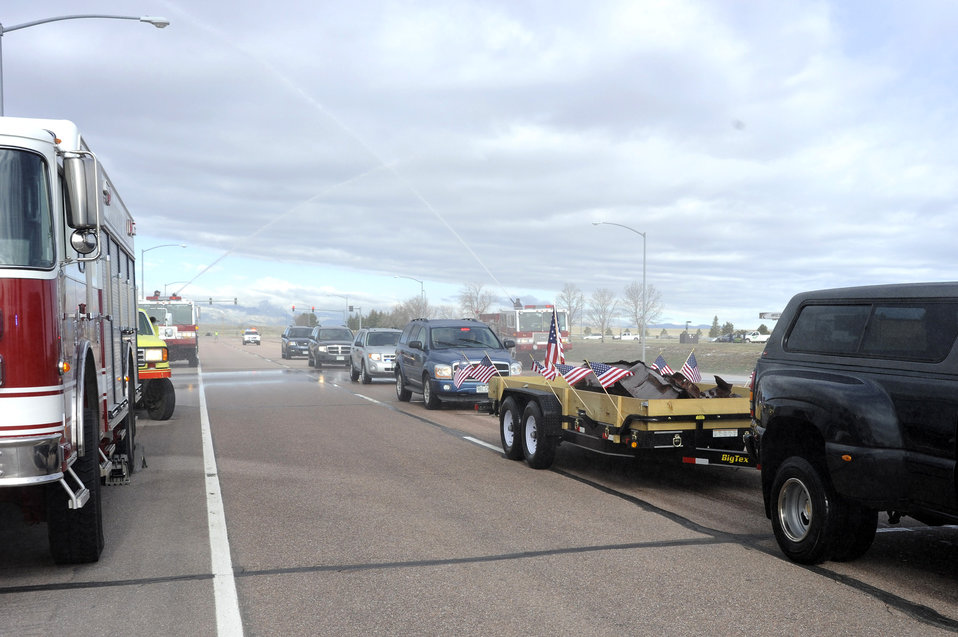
Future memorial for Schriever

A beam from one of the collapsed towers of the World Trade Center arrives April 26, 2010, at Schriever Air Force Base, Colo. The beam will become part of a memorial on base to commemorate the events of Sept. 11, 2001.